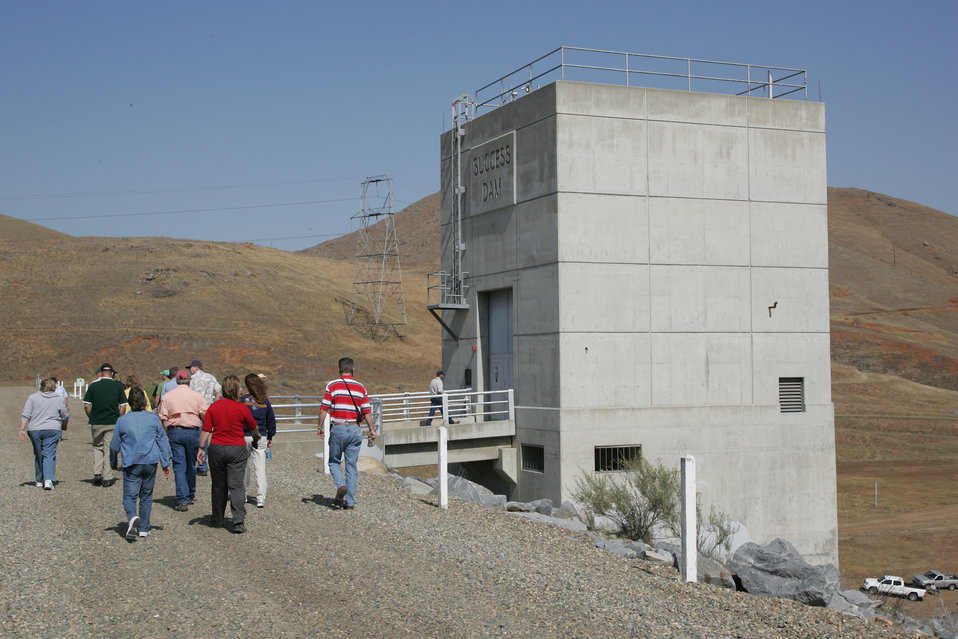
Success Dam

Visitors observe the control structure at Success Dam, located near Porterville, Calif., May 1, 2007. The U.S. Army Corps of Engineers Sacramento District completed construction of Success Dam in 1961 and the reservoir provides flood risk management, water storage and recreational benefits to the local area.